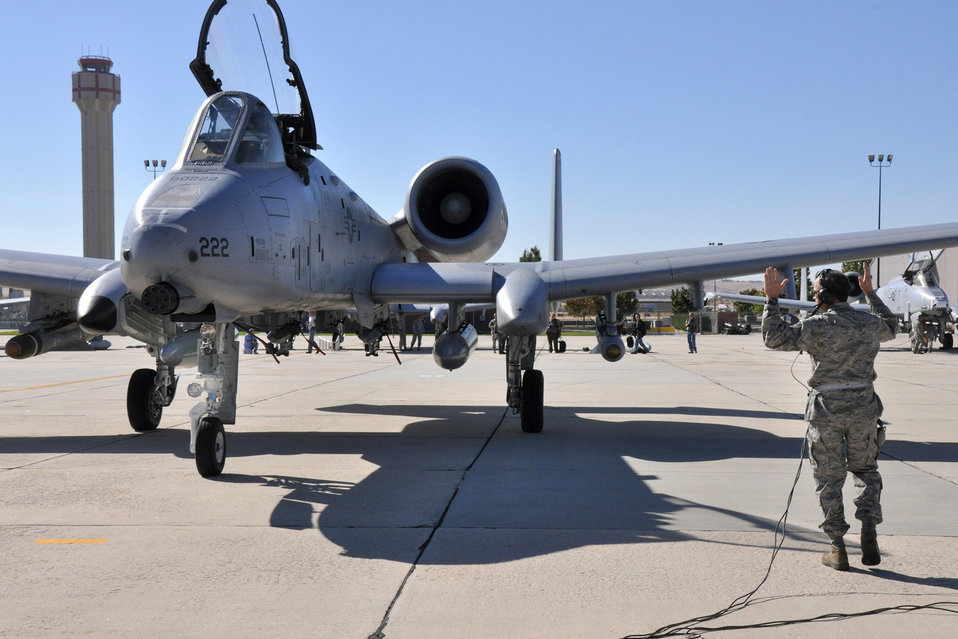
Hawgsmoke 2010

Tech. Sgt. Kenneth Green marshals in an A-10 Thunderbolt II into place on the ramp Oct. 13, 2010, at Hawgsmoke 2010 on Gowen Field in Boise, Idaho. Sergeant Green is an A-10 aircraft mechanic with the with the Air Force Reserve Command's 717th Aircraft Maintenance Squadron at Barksdale Air Force Base, La.